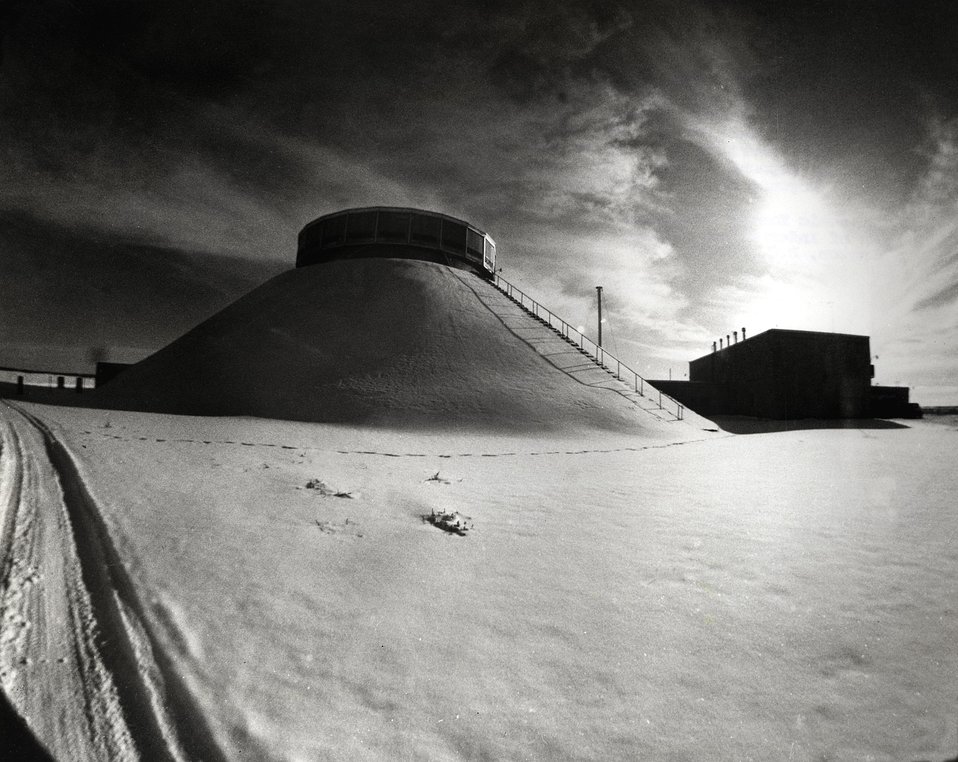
The AEC's ZPPR in Idaho is the only fast critical facility in the country capable of providing reactor physics data on full-size LMFBR demonstration plant cores.